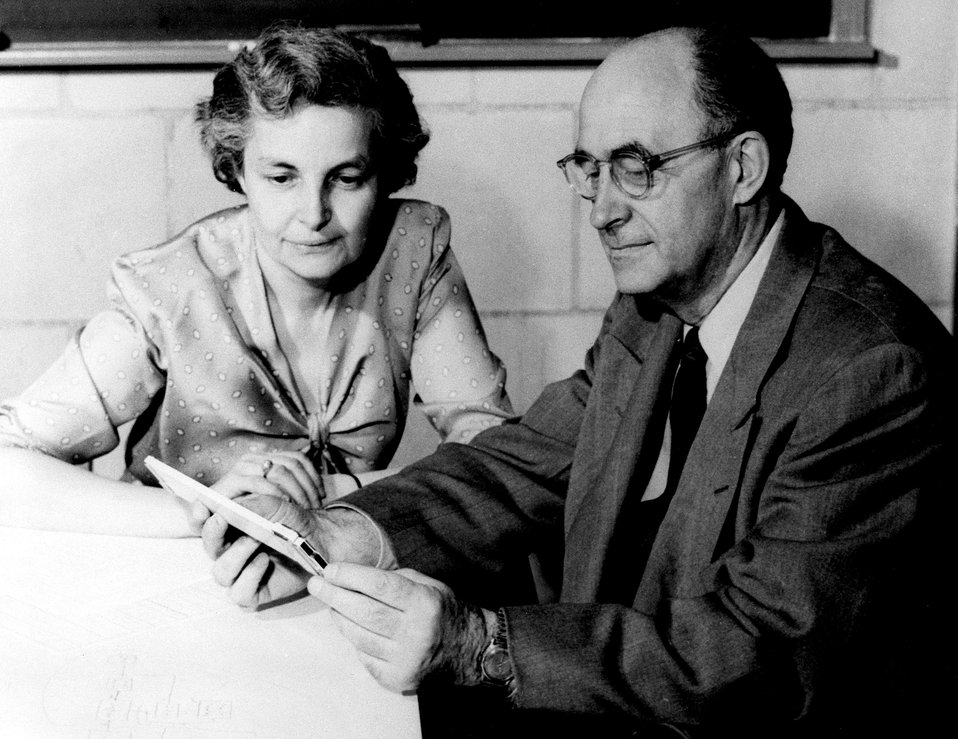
Enrico and Laura Fermi.